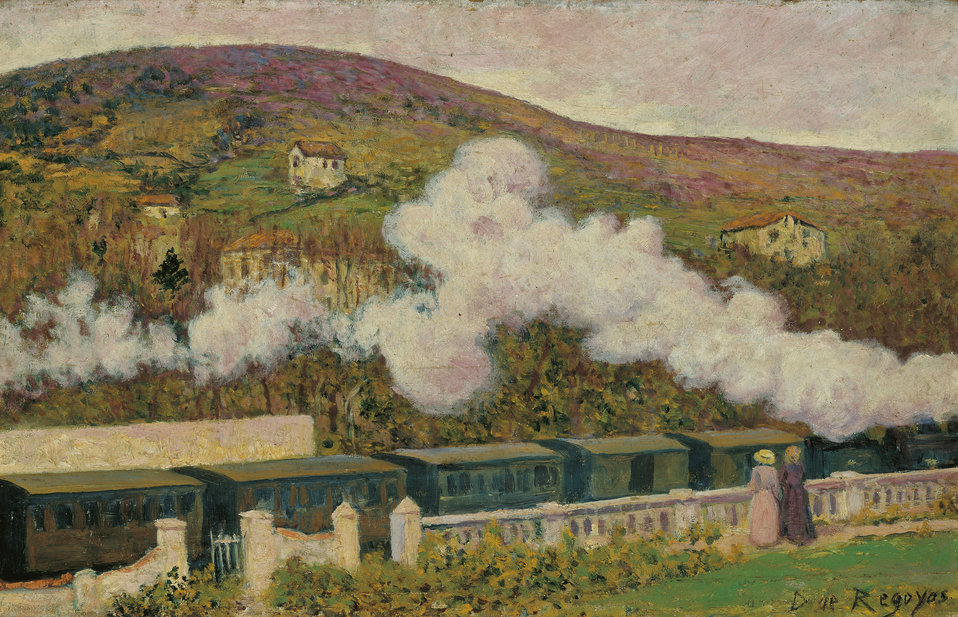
The Passing of the Train. Oil on panel. 35 x 55 cm, Inv. CTB.1995.36 Museo Carmen Thyssen Native name Museo Carmen Thyssen Location Málaga, Spain Coordinates 36° 43′ 17″ N, 4° 25′ 22″ W Established 2011 Website www.carmenthyssenmalaga.org